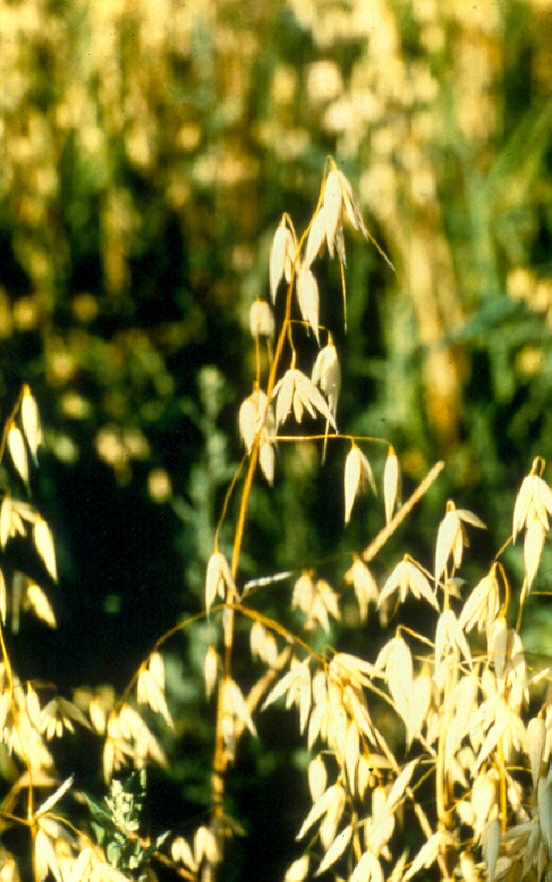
Wild Oats Salmon FIeld Office UCSC Upper Columbia Salmon Clearwater District